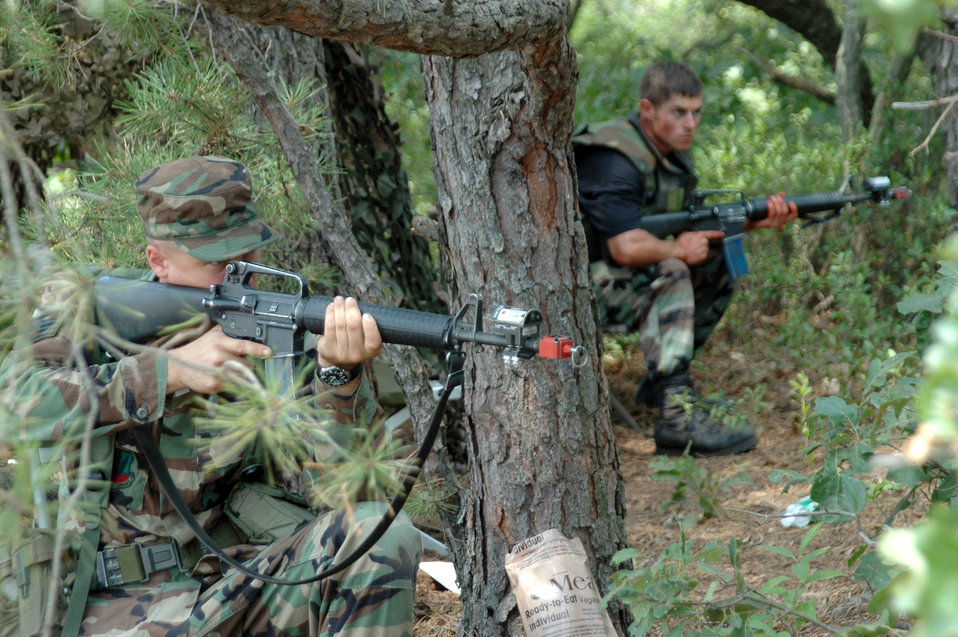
Eagle Flag

NAVAL AIR ENGINEERING STATION LAKEHURST, N.J. -- Airmen provide security at a simulated deployed location at the Air Force's Eagle Flag exercise recently. Nearly 400 Airmen Air Force-wide deployed to the exercise, which is designed to test expeditionary combat support capabilities.